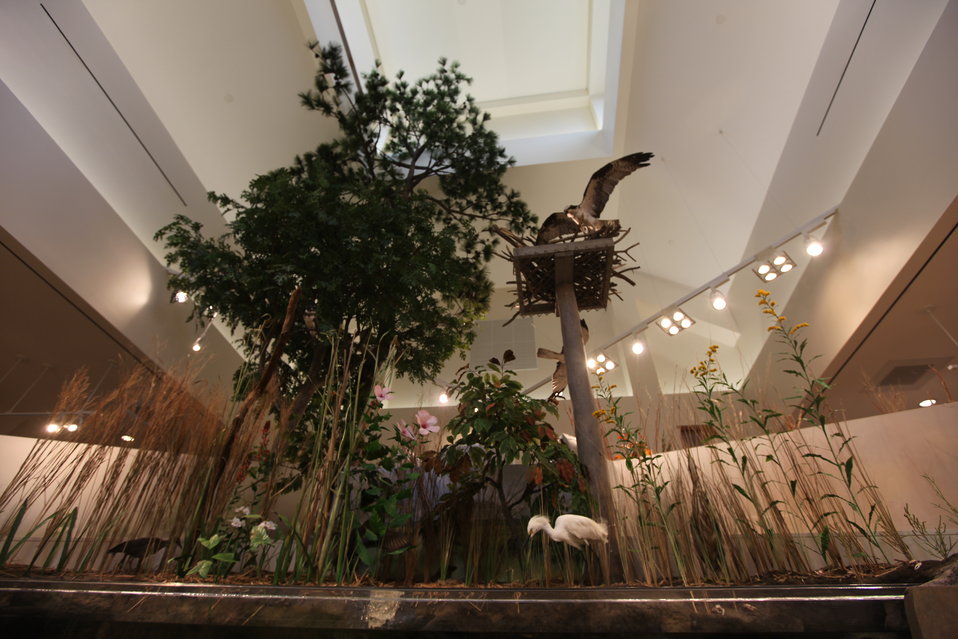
Wetland exhibit showing habitat, typical species and even live fish!